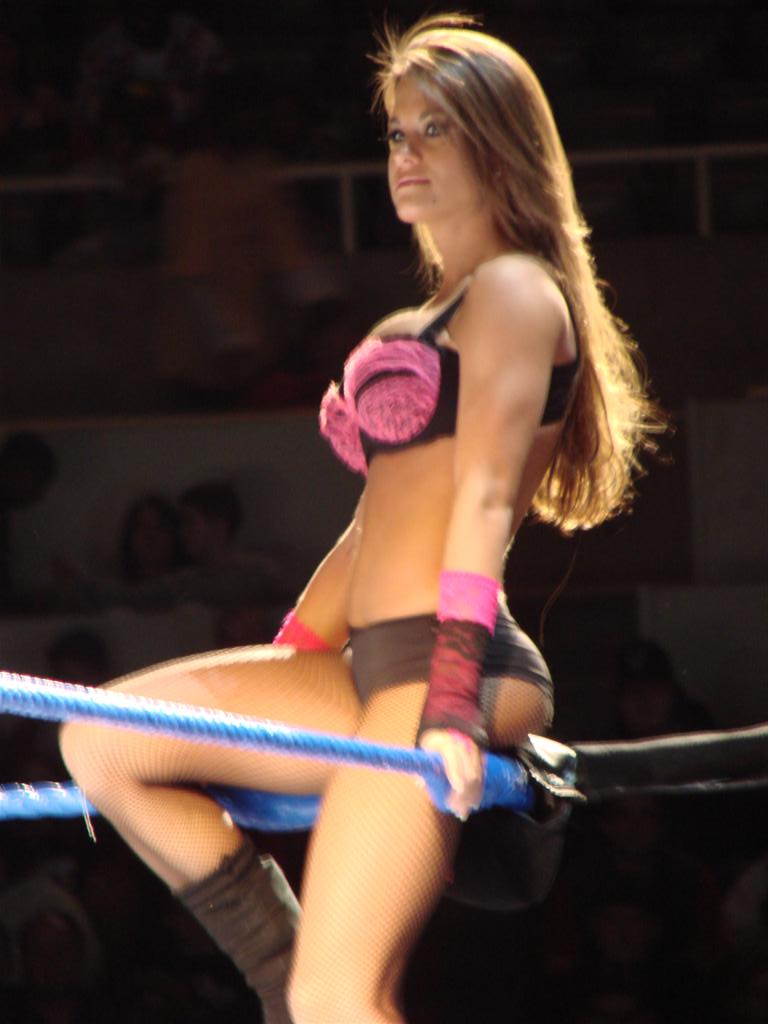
Brooke Adams at an Extreme Championship Wrestling (WWE) Live Event in Champaign, IL on February 4 en:2007.